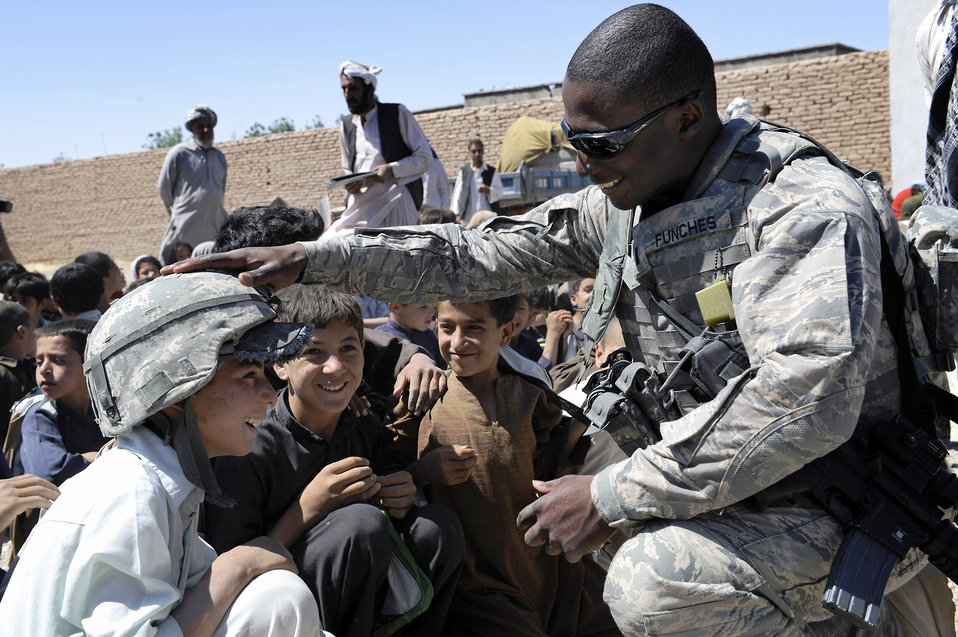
Too big for you

At Rhey Village near Herat, Afghanistan, 1st Lt. Etan Funches lets an Afghan boy try on his helmet, Sept. 2, 2009. Lieutenant Funches is deployed to nearby Camp Stone from Schriever Air Force Base, Colo.